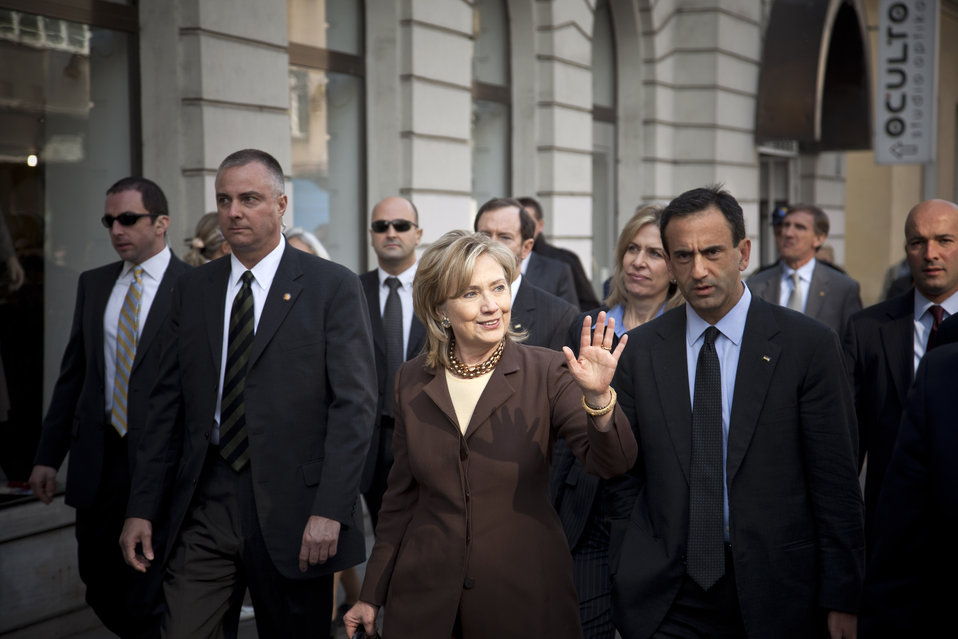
Secretary Clinton and Assistant Secretary Gordon Walk in Sarajevo

U.S. Secretary of State Hillary Rodham Clinton and U.S. Assistant Secretary of State for European and Eurasian Affairs Philip H. Gordon walk in Sarajevi, Bosnia and Herzegovina, on October 12, 2010.